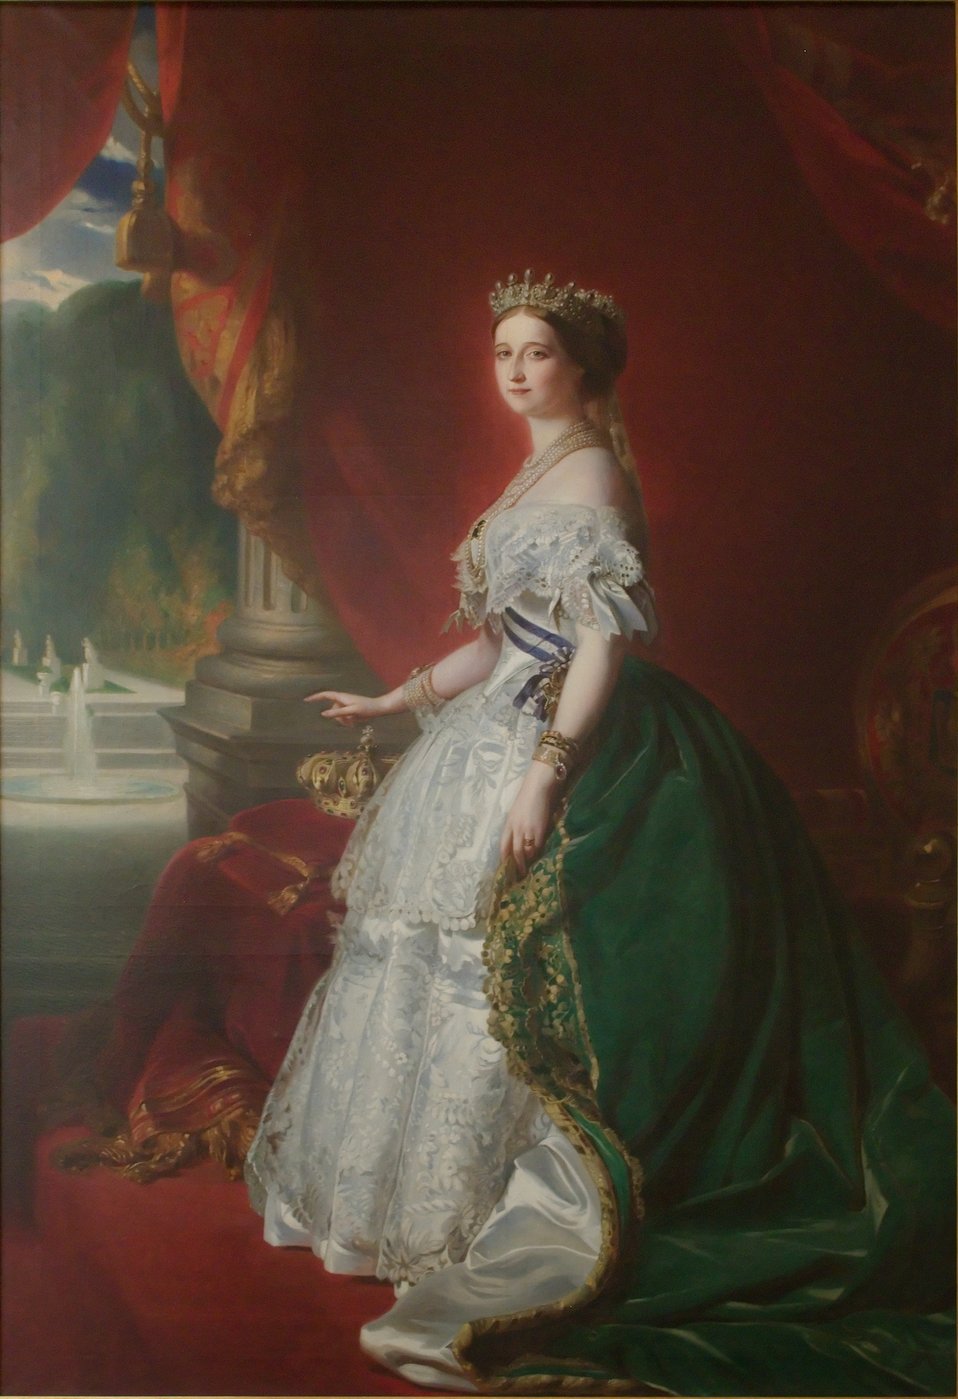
''L'imperatrice Eugenie'' de Franz-Xaver Winterhalter